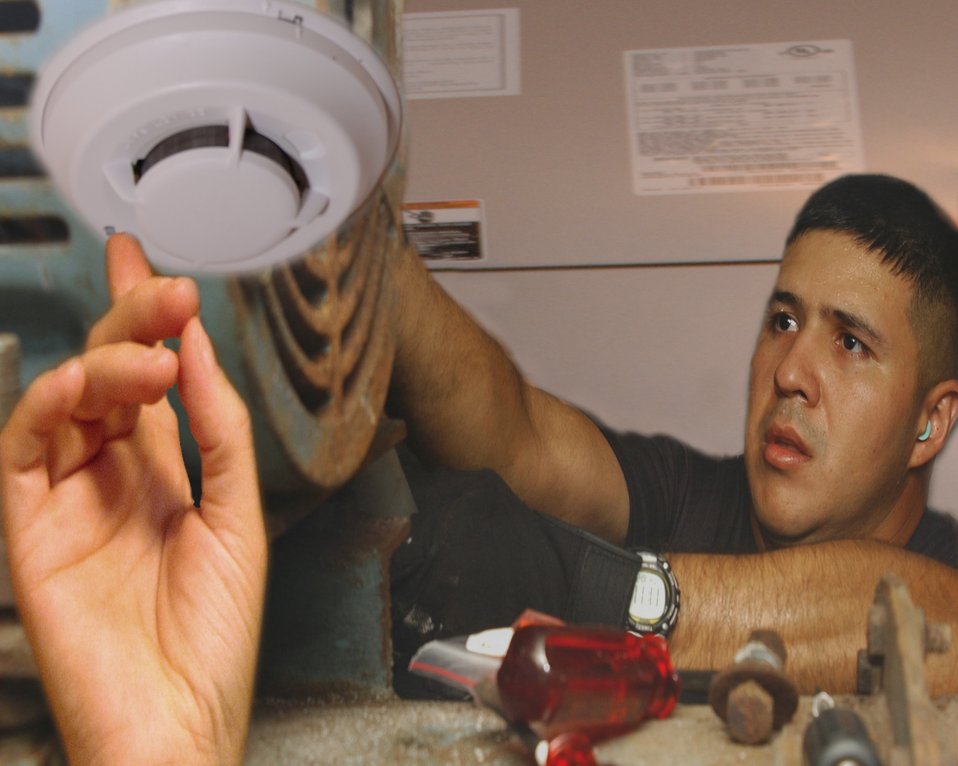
Check your CO

One of the biggest dangers in a home is the heating system's potential to release of carbon monoxide poisoning. Having working CO detectors in the home is as important as having working smoke alarms.